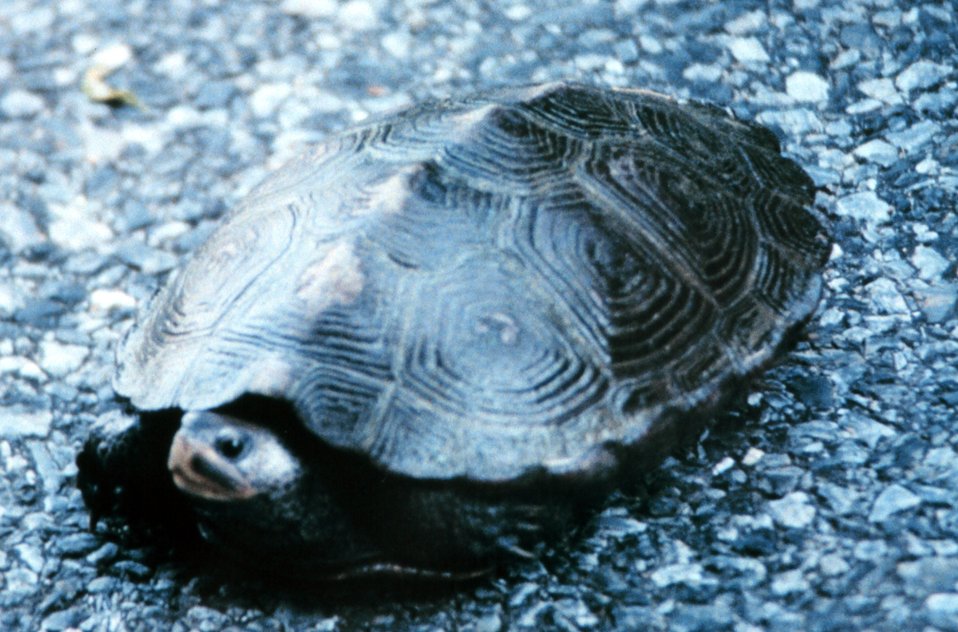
A female diamondback terrapin, probably looking for a good place to deposit her eggs.